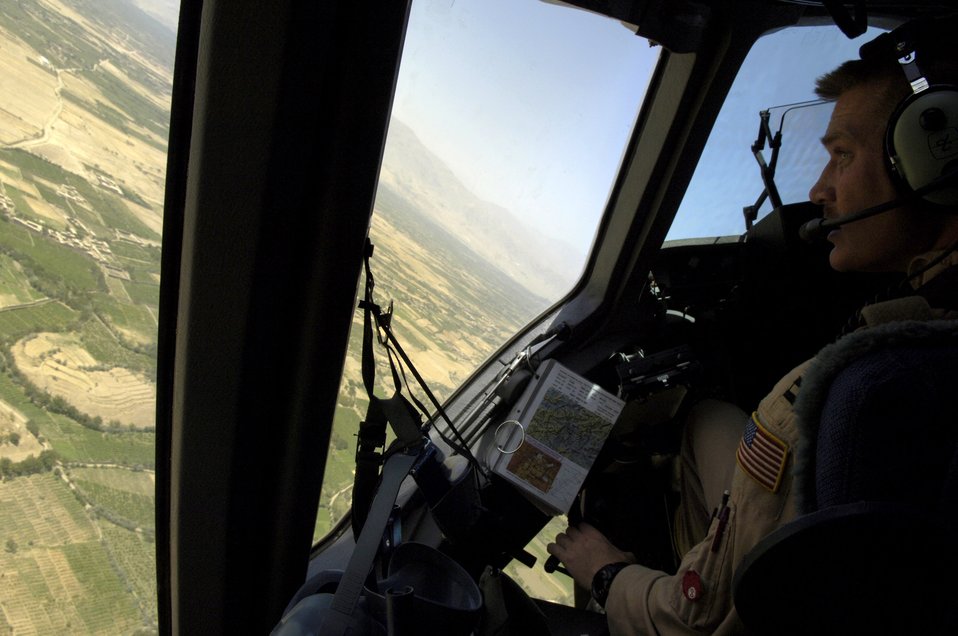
Globemaster operations

Capt. Nick Kreiser banks left over Bagram Air Base, Afghanistan, as his C-17 Globemaster III climbs to a safe altitude on Aug. 5. Captain Kreiser is a pilot with the 816th Expeditionary Airlift Squadron. The squadron flew more than 1,200 sorties in July, delivering cargo and troops in support of operations Iraqi Freedom and Enduring Freedom.